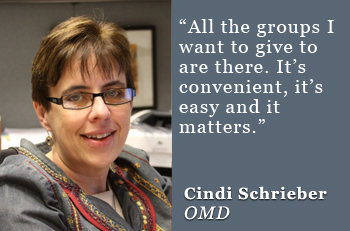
cindi-schrieber